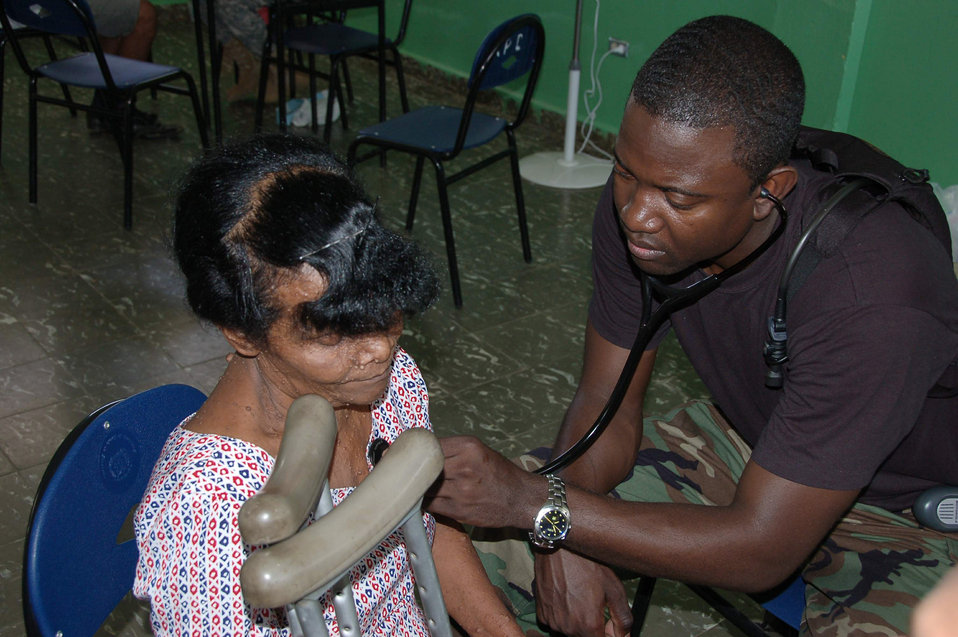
Medics provide care to people in Dominican Republic

Capt. Keiron T. Kennedy gives a physical exam to a patient with neurofibromatosis, a genetic disorder causing multiple tumors, at a temporary clinic in Hostos, Dom. Rep., April 21, during a medical readiness exercise. The medics treated 1,800 patients during the first two days of the U.S. Southern Command sponsored Beyond the Horizon 2009 - Caribbean. Captain Kennedy is a flight surgeon from the 42nd Medical Group at Maxwell Air Force Base, Ala.,